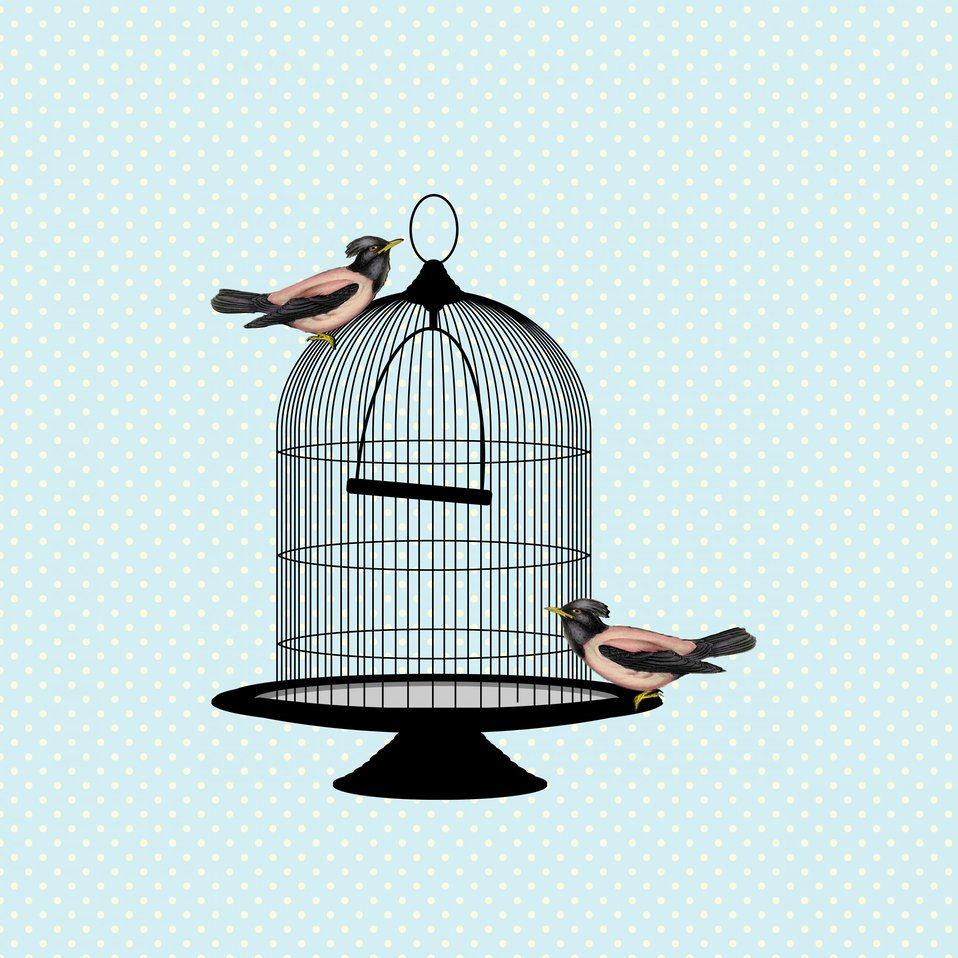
Vintage bird and cage

Two vintage birds with bird cage on polka dots.